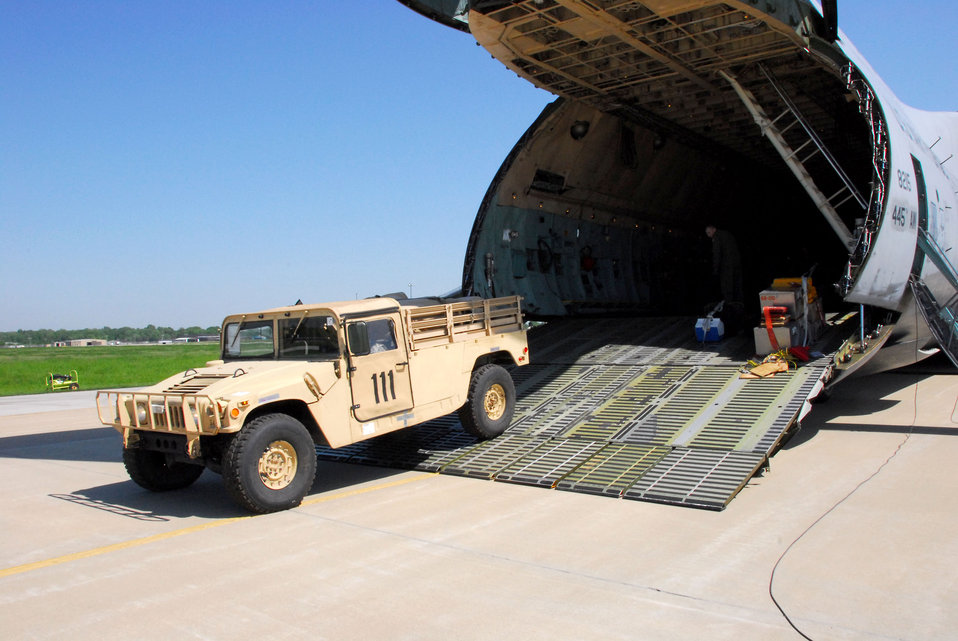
C-5 equals max capacity

Army personnel off-load trucks May 12 from a C-5 Galaxy at Hulman Field in Terre Haute, Ind., in support of Exercise Ardent Sentry. Ardent Sentry is designed to hone coordination between the Department of Defense as well as federal, state, local and private agencies in a series of challenging scenarios ranging from natural disasters to terrorist incidents.